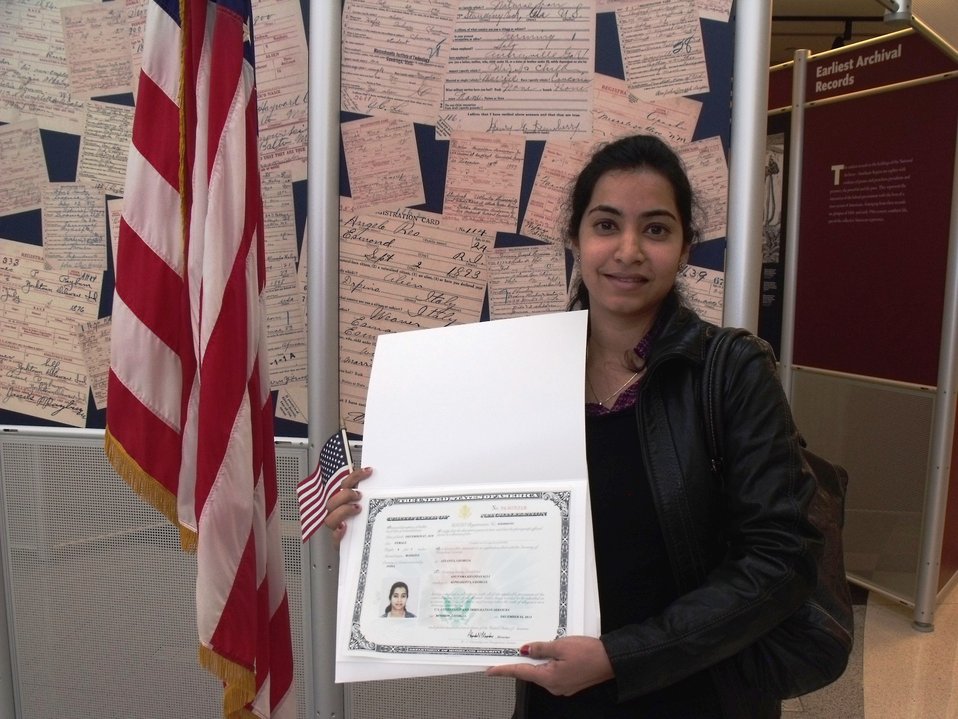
New Citizens